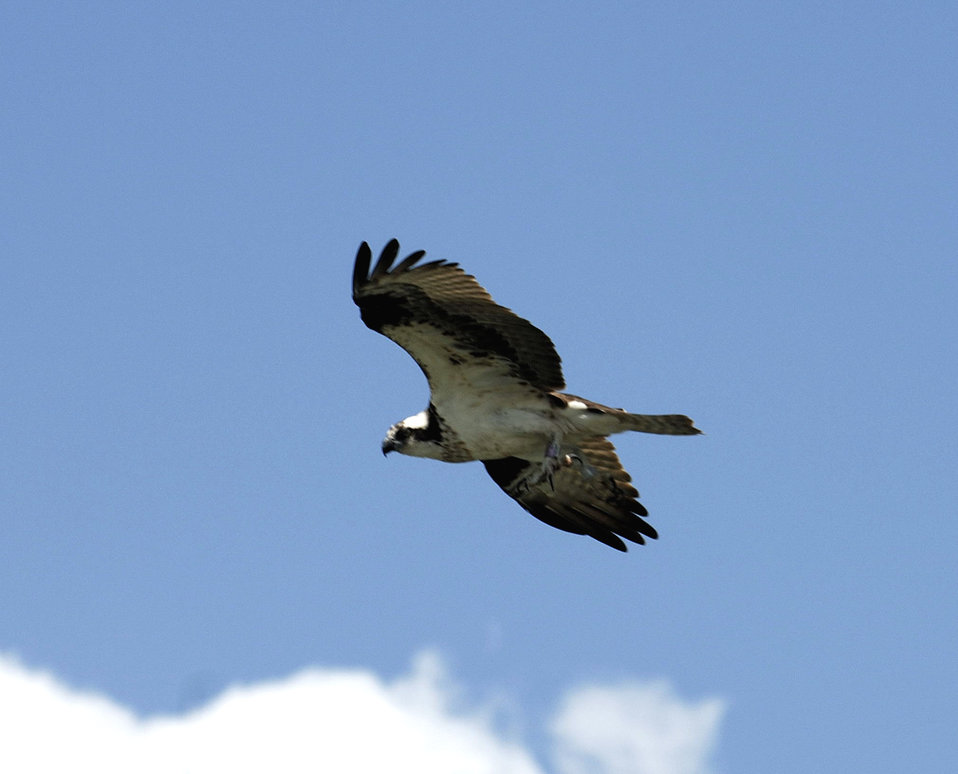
Osprey tracking

An osprey takes flight after being caught and tagged at Langley Air Force Base, Va., on Wednesday, May 17, 2006. The U.S. Department of Agriculture is collecting, tagging and tracking the birds to reduce conflicts with base aircraft.